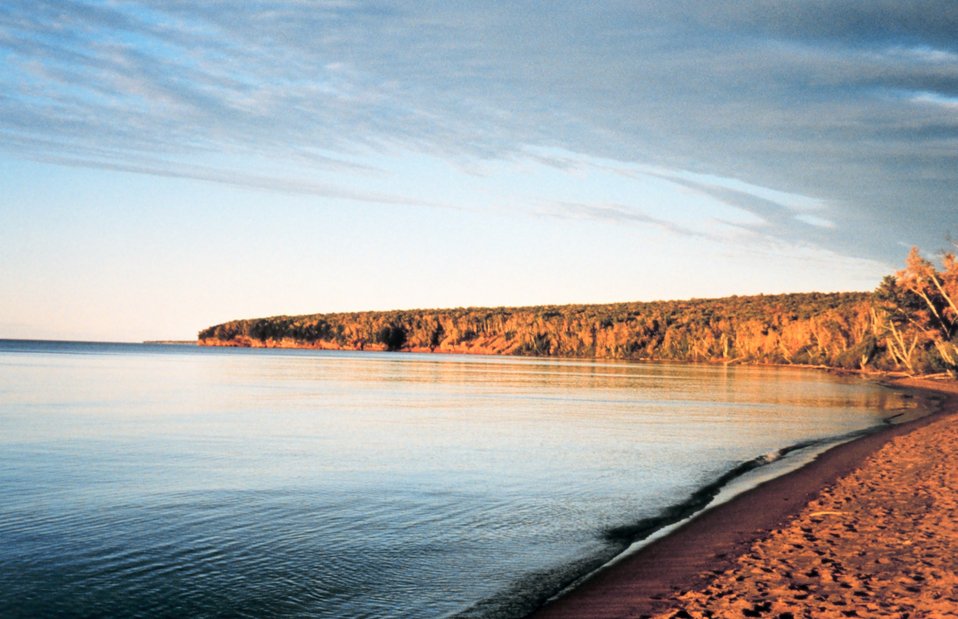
Park Point area